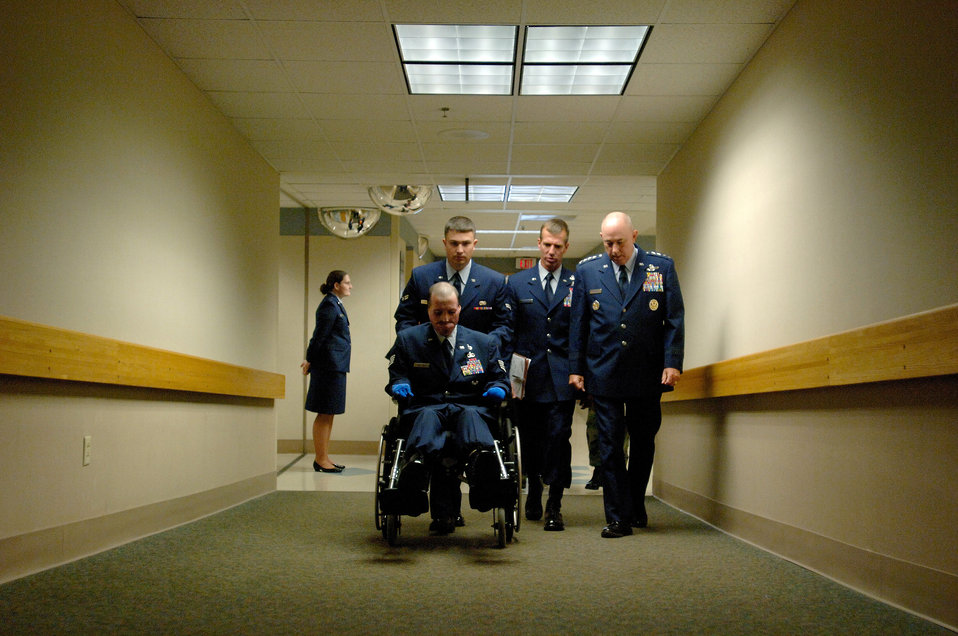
Purple Heart Presentation

Staff Sgt. Israel del Toro and Air Force Chief of Staff T. Michael Moseley are escorted to the Brooke Army Medical Center auditorium before the presentation of the Purple Heart Medal today at Fort Sam Houston, Texas. Sergeant del Toro was wounded during combat action in Afghanistan in December 2005 while supporting Operation Enduring Freedom.